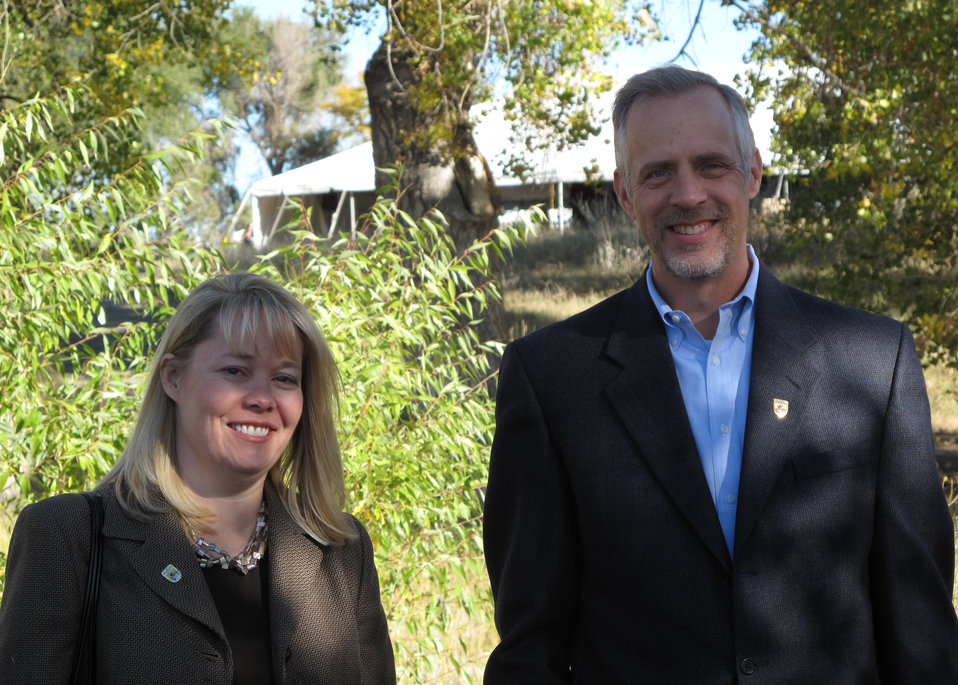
Region 6 Directors

Deputy Regional Director, Noreen Walsh and Regional Director, Steve Guertin at the deletion event at the Rocky Mountain Arsenal.